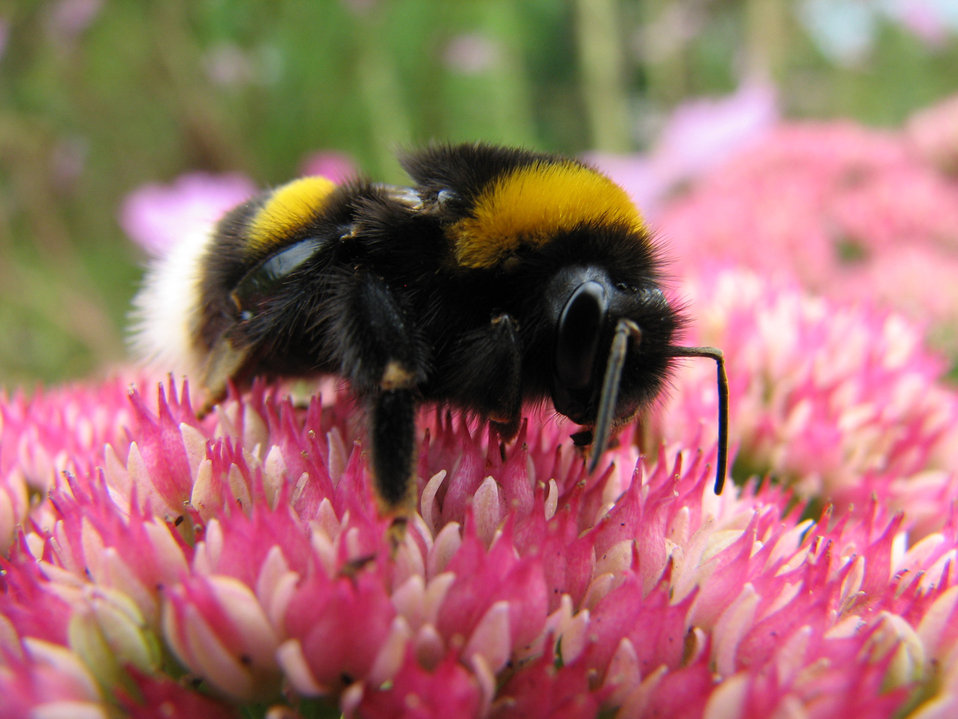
Bumblebee on flower.